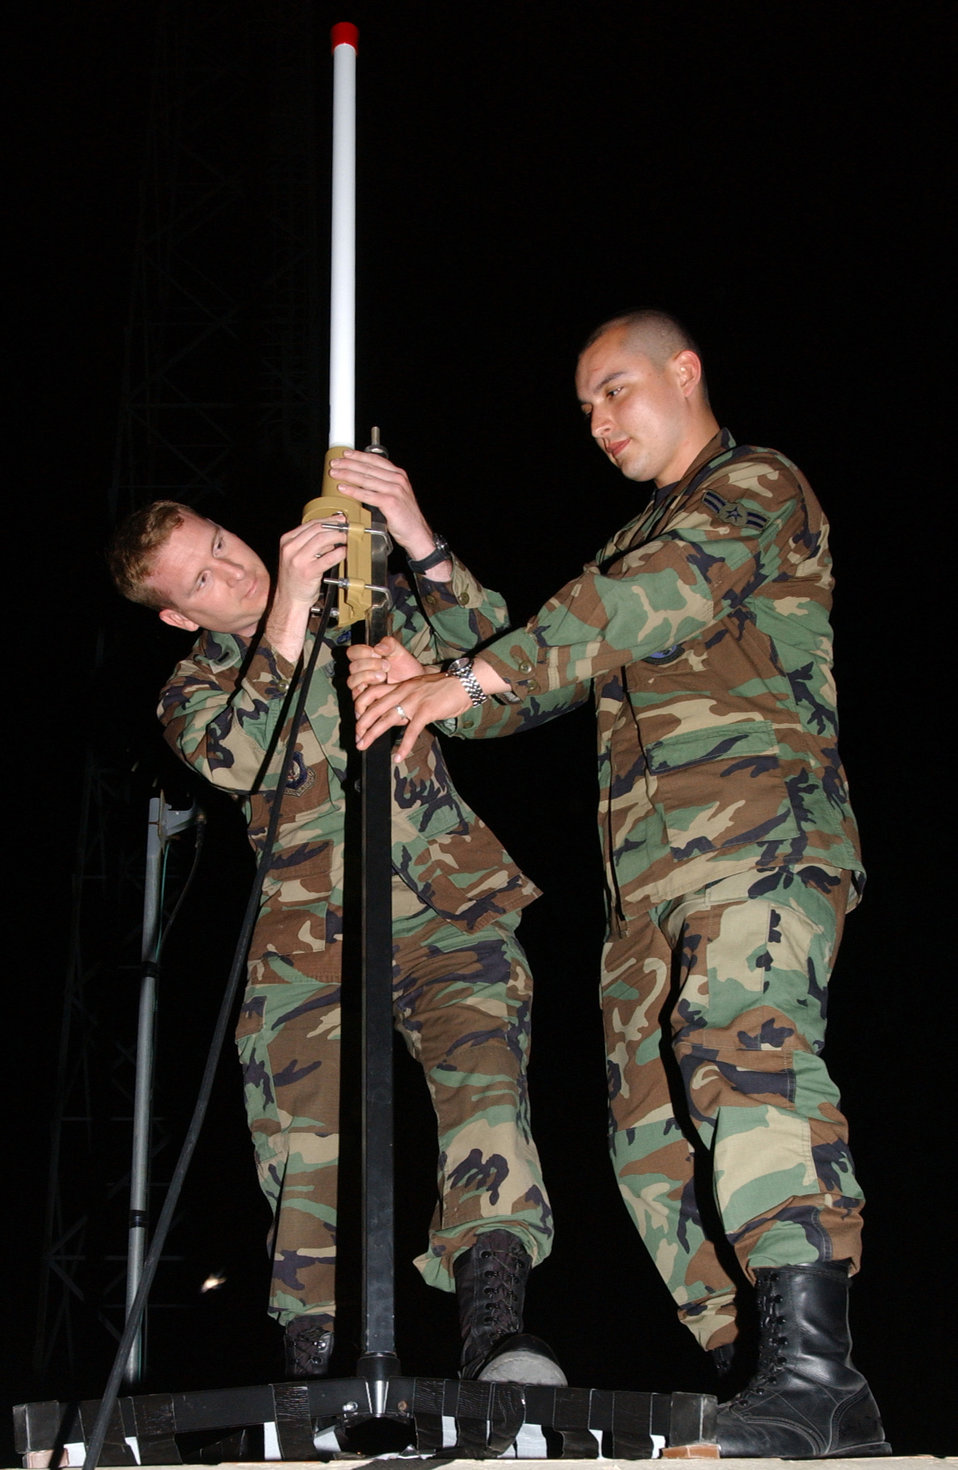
Antenna on the roof

ROYAL AIR FORCE MILDENHALL, England -- First Lt. Rusty Clark (left) and Airman 1st Class Steve Mejia disassemble a ultra high frequency antenna from the roof of the base operations center here July 16. Lieutenant Clark and Airman Mejia are both members of the 100th Communications Squadron.